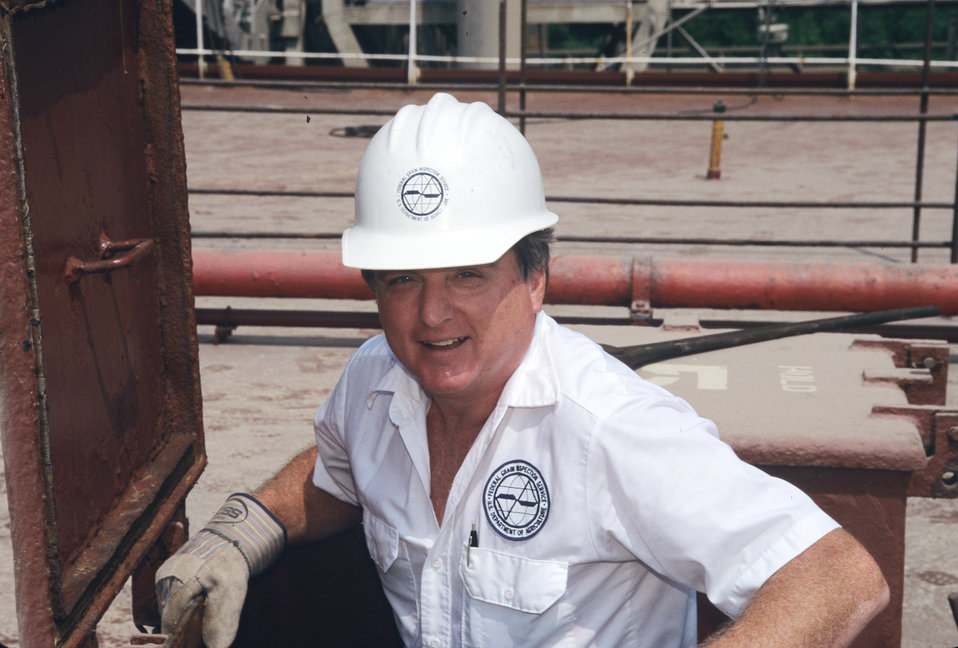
A U.S. Department of Agriculture (USDA) Grain Inspection, Packers and Stockyards Administration (GIPSA) Federal Grain Inspection and Weighing Services (FGIS) agent returns topside after completing the stowage inspection of a ship’s hold at the Bunge Grain Facility in Destrehan, LA on Sept. 1, 1996. USDA GIPSA offers inspection services for rice upon request on a fee basis for both domestic and export shipments. Rice inspection services are divided into two basic types: inspection for grade or factor analysis without grade. Inspection for grade involves analyzing the sample according to the quality factors listed in the Official U.S. Standards for Rice and certifying the applicable numeric grade designation, the quality factors responsible for the grade assignment, and any other quality factors the customer requests. Factor analysis involves the analysis of quality factors requested by the applicant for service without the certification of an applicable numeric grade designation. Factors requested by applicants might include free fatty acid, total oil and free fatty acid, stain as a count, broken in brown rice, false smut, and aflatoxin. Official inspections result in the issuance of an official certificate, which reports the grade of the rice. U.S. and international buyers rely on official USDA inspection certificates to provide accurate, official descriptions of the grade, class, and condition of the inspected rice. Official certificates are receivable by all offices and all courts of the United States as prima facie evidence of the truth of the statements stated thereon.